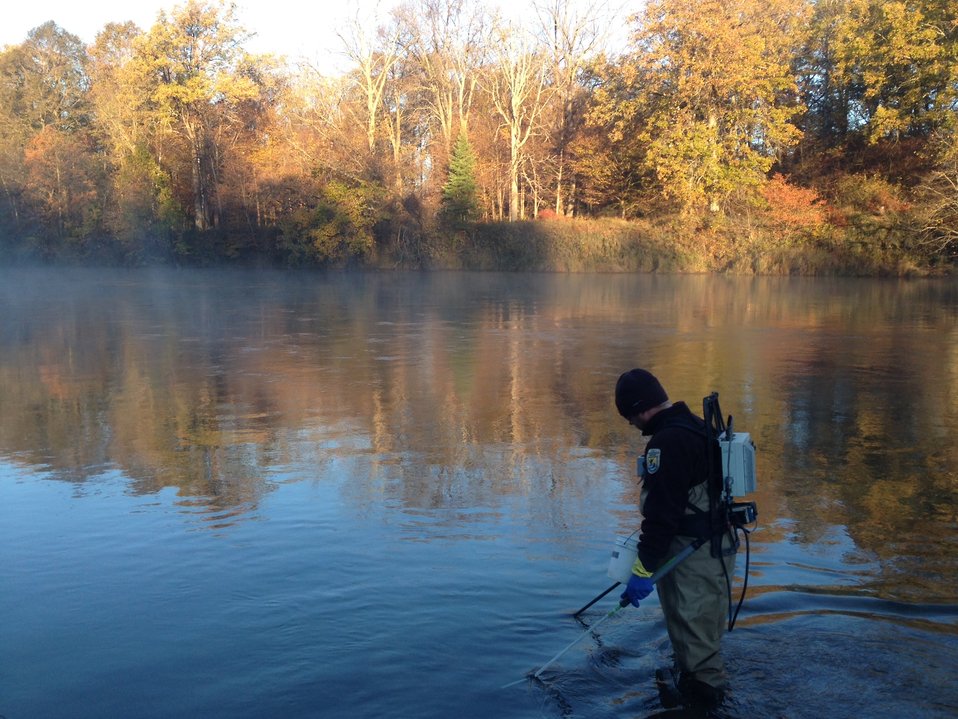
Jason Krebill, Service employee, collects sea lamprey larvae on the Au Sable River, near Oscoda MI, in late October.